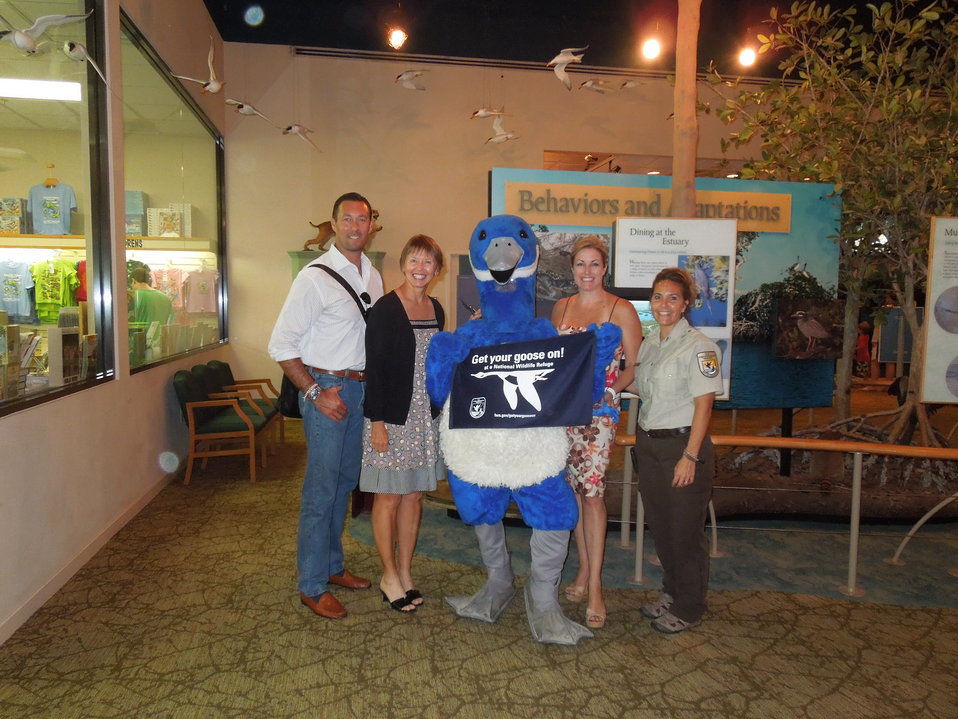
Get Your Goose On!